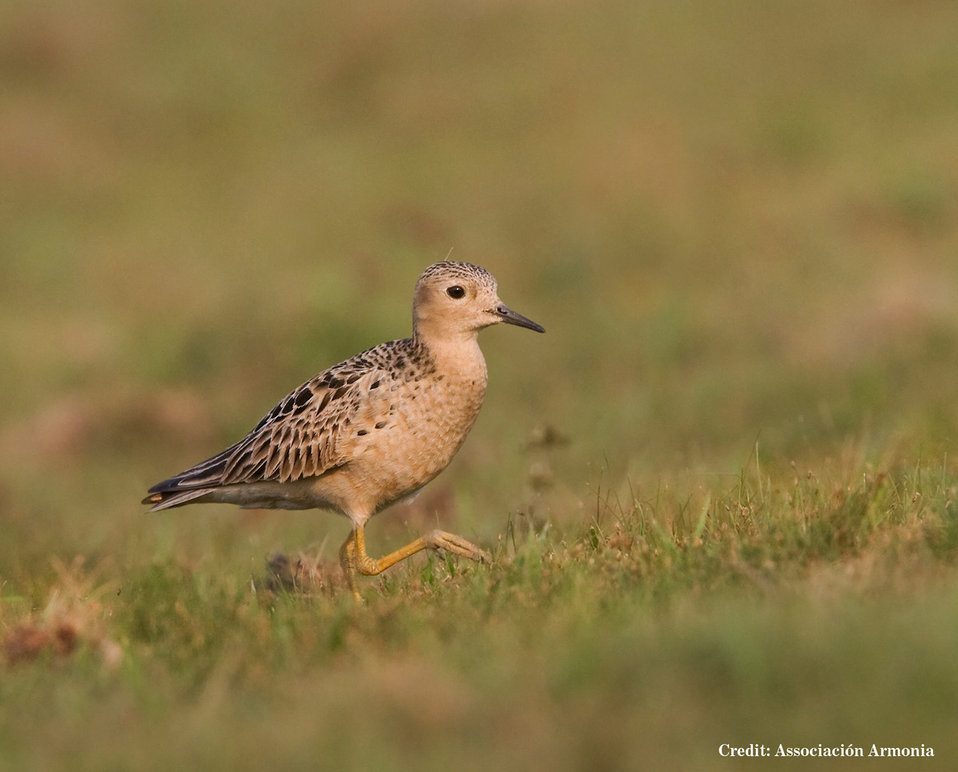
Buff-breasted Sandpiper in Bolivia.